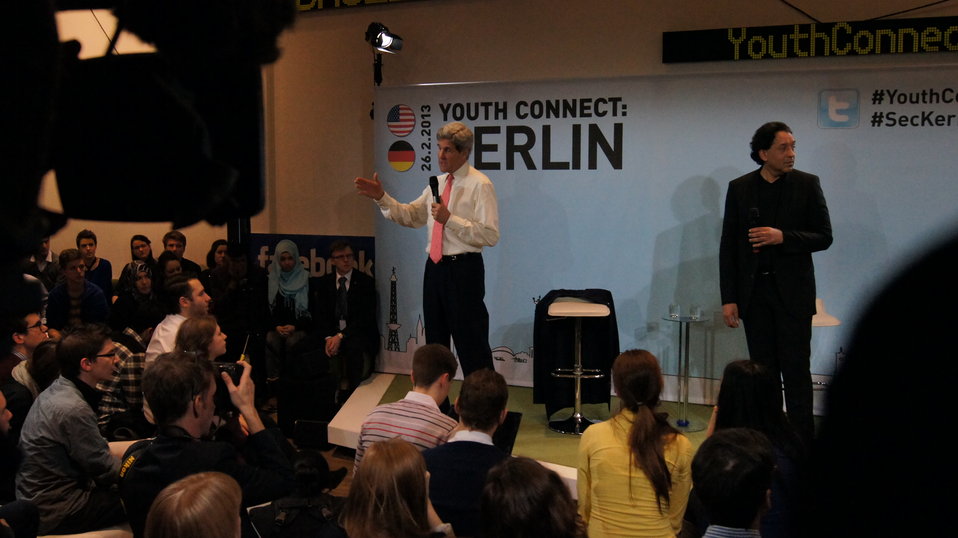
Secretary Kerry Engages Young German Innovators and Leaders in Berlin

U.S. Secretary of State John Kerry engages young German innovators and leaders at his first Youth Connect event with moderator/journalist Cherno Jobatey in Berlin, Germany, February 26, 2013.